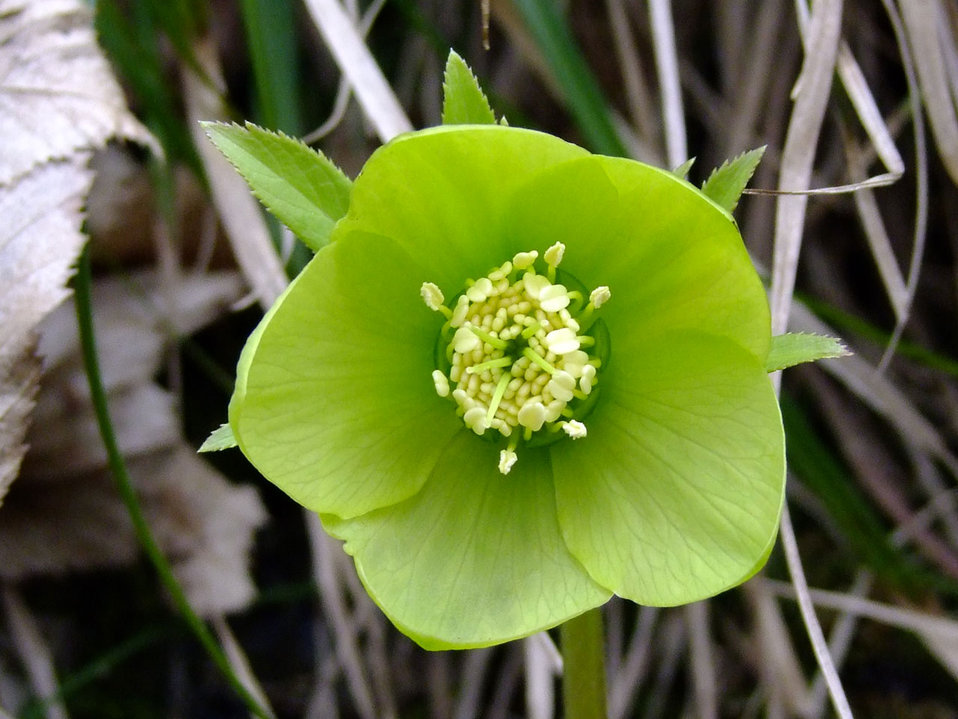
Green light

First spring flowers.